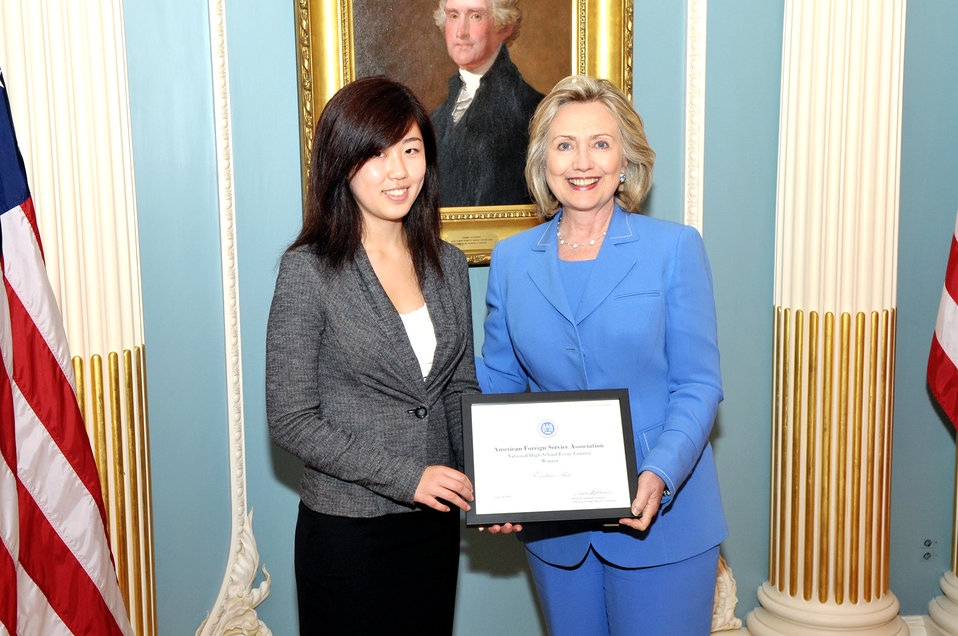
Secretary Clinton Meets With AFSA 2010 Essay Winner Bai

U.S. Secretary of State Hillary Rodham Clinton meets with the American Foreign Service Association 2010 Essay Winner Evaline Bai at the U.S. Department of State in Washington, D.C., on August 11, 2010.